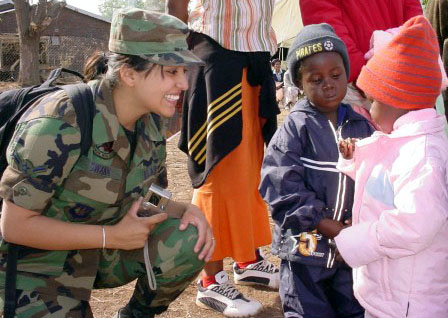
Airmen making a difference in South Africa

NGWAABE, South Africa -- Airman Angelica Swann talks to young children who are waiting outside the pediatric tent at the clinic here. She is deployed from the 48th Medical Group at Royal Air Force Lakenheath, England.